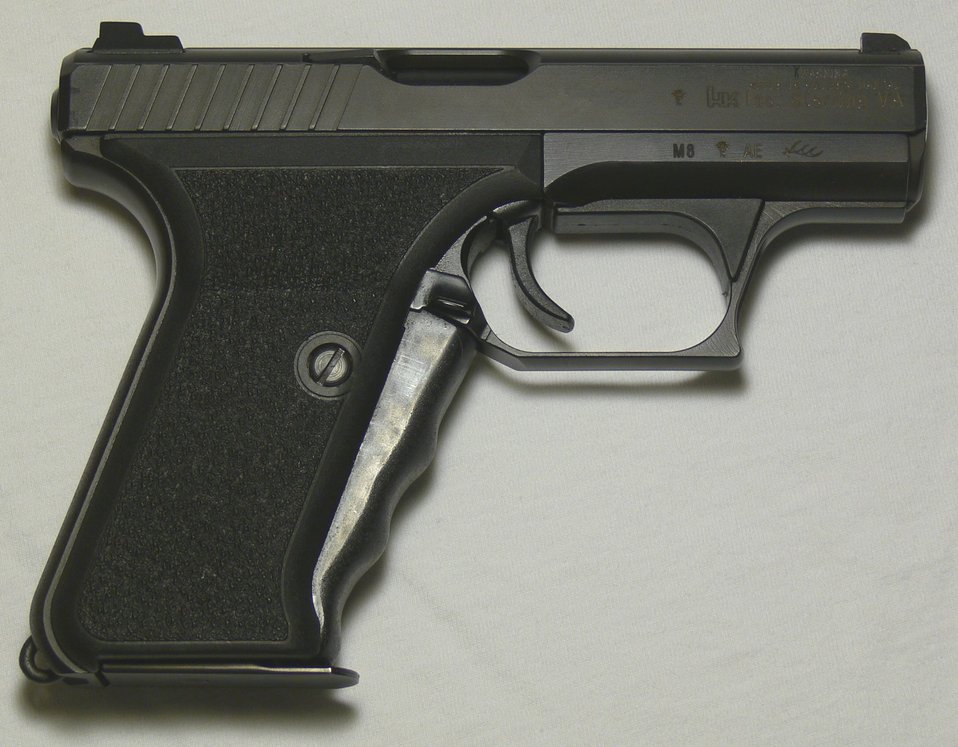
P7M8 pistol. Caliber 9 mm Parabellum.